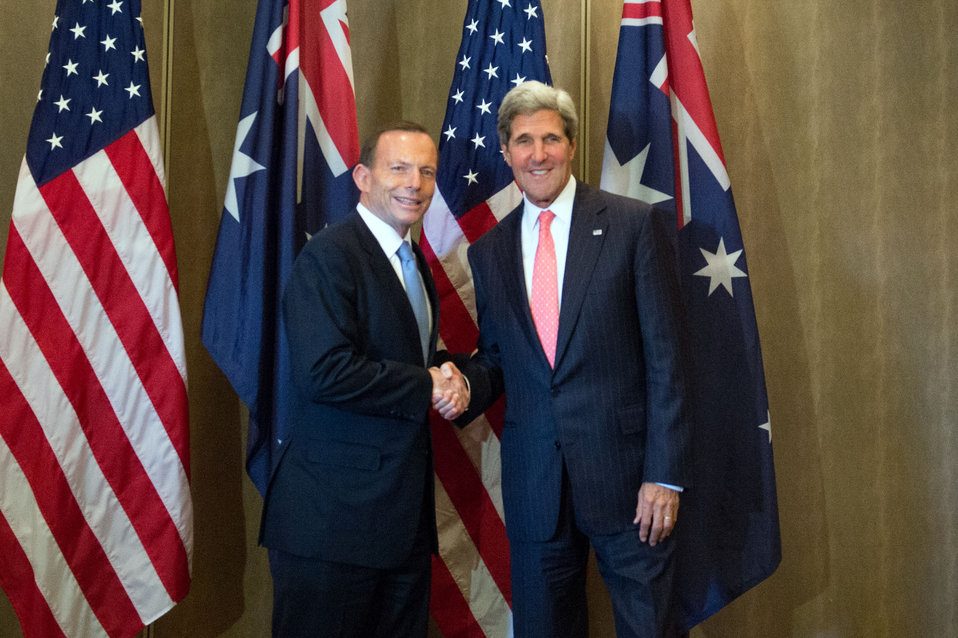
Secretary Kerry Greets Australia's Prime Minister Abbott

U.S. Secretary of State John Kerry shakes hands with Australian Prime Minister Tony Abbott before their meeting in Bali, Indonesia, on October 8, 2013.